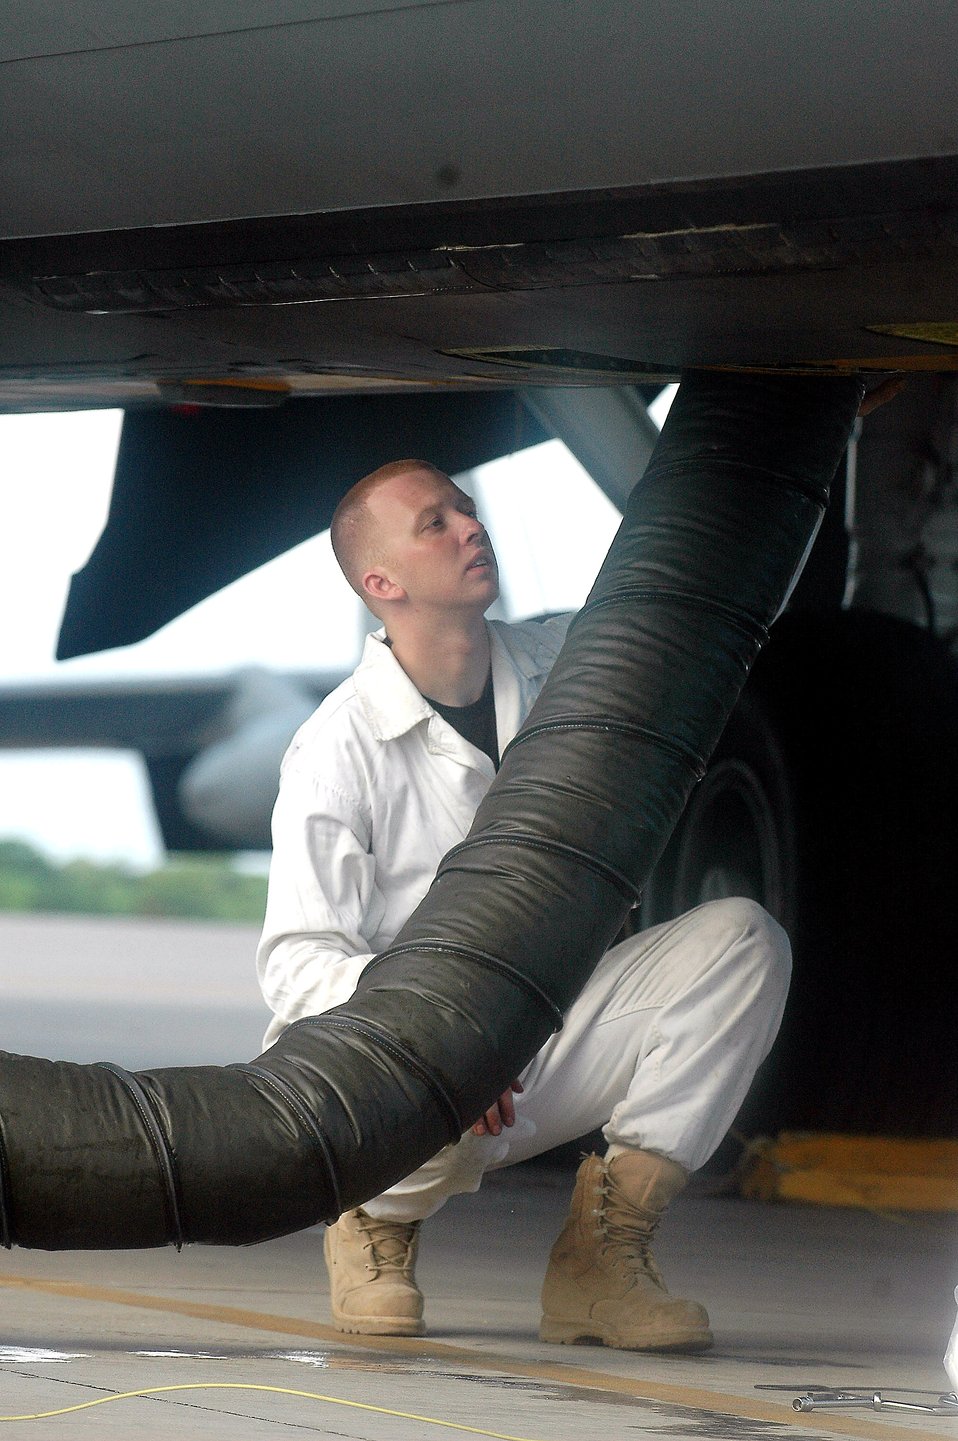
KC-135s build air bridges

Senior Airman Keith Dodge uses forced air to purge fumes from a fuel bladder being replaced on a KC-135 Stratotanker operating in support of Operation Enduring Freedom. Airman Dodge is a fuel systems apprentice with the 28th Expeditionary Air Refueling Squadron.